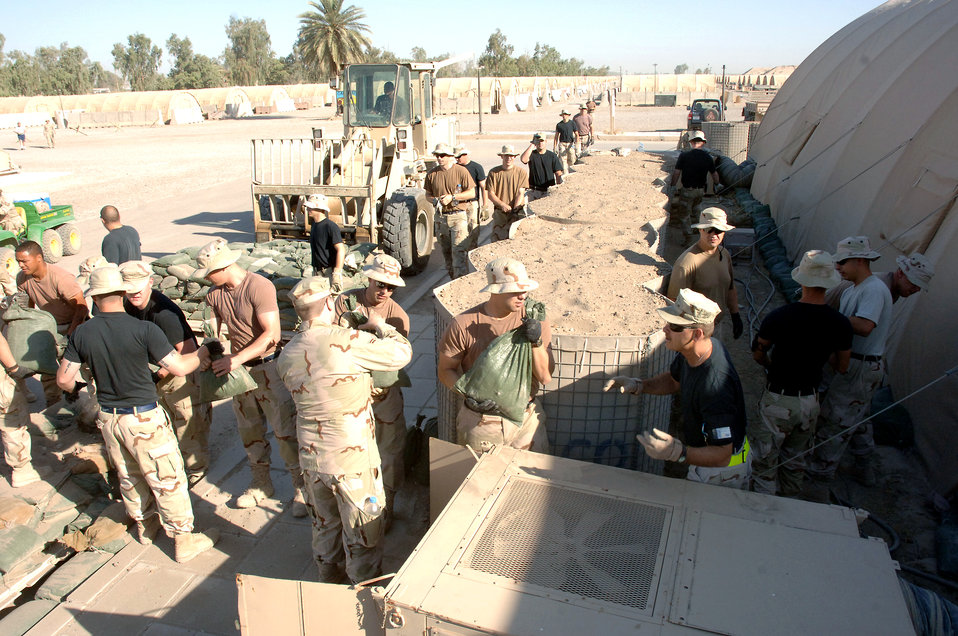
Fightin' the desert heat

More than 50 Airmen from the 447th Air Expeditionary Group at Sather Air Base, Iraq, teamed up on Wednesday, June 7, 2006, to sandbag their recreation center to keep the cool air inside from escaping. Sather AB is located at Baghdad International Airport.